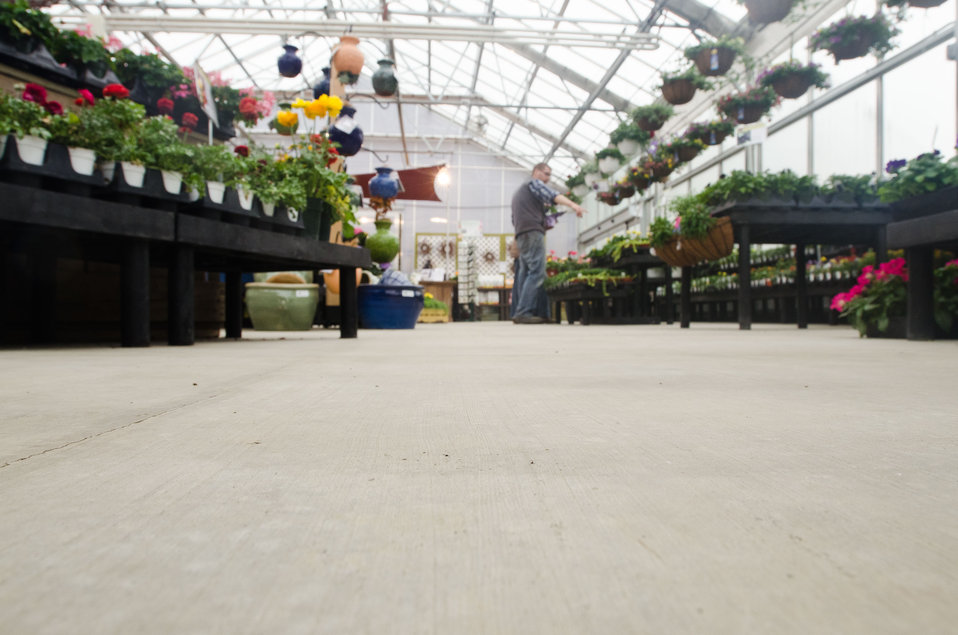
In the cement floor that Dwight Hess stands on, on April 19, 2011, are 8,000 feet of heating tube that, when needed will circulate hot water, keeping the plants warmed up to at least 50 degrees even when outside temperature may be zero degree at the Good Harvest Farm in Strasburg, PA,. The Farm completed a Rural Energy for America Program (REAP) grant supported renovations six months ago that replaced an 80-year old structure with a new 4,000 sq. ft. facility that features energy efficient glass roof with curtains that block or trap heat, radiant heaters in or above the floor, and the replacement of an oil-fired hot-air furnaces with propane fueled boilers that supply fin-tube and cement embedded tube elements with hot water. With current fuel prices, there is a projected 2011 energy cost savings of more than $20,000; a 40% reduction in energy costs – exceeding projected savings. Plant health and quality has improved and been more consistent because the temperature and humidity is computer controlled and distributed evenly throughout the facility. Utilizing sensors and a roof mounted weather station the system can maintain four different climate zones 24-hours a day. Two 1,000,000 BTU propane fueled boilers heat the water to 190 degrees for the 8,000 feet of fin-tube heating elements were used where the original foundation, and the 8,000 feet of tubing that was embedded in a new cement foundation. After traveling through the energy efficient system, water only looses 20 degrees. When temperatures become to hot, motorized roof vents open to allow rising heat to escape; a 98% energy savings from massive fans that previously forced air out. Both systems create a microclimate in and round the plant trays in the growing and sales room. Representing Good Harvest Farm Chris Powell says, “You don’t need to have a lot of land to have a lot of green houses. There are places in cities where vegetables are grow on store roof tops and selling them below in the same structure.”